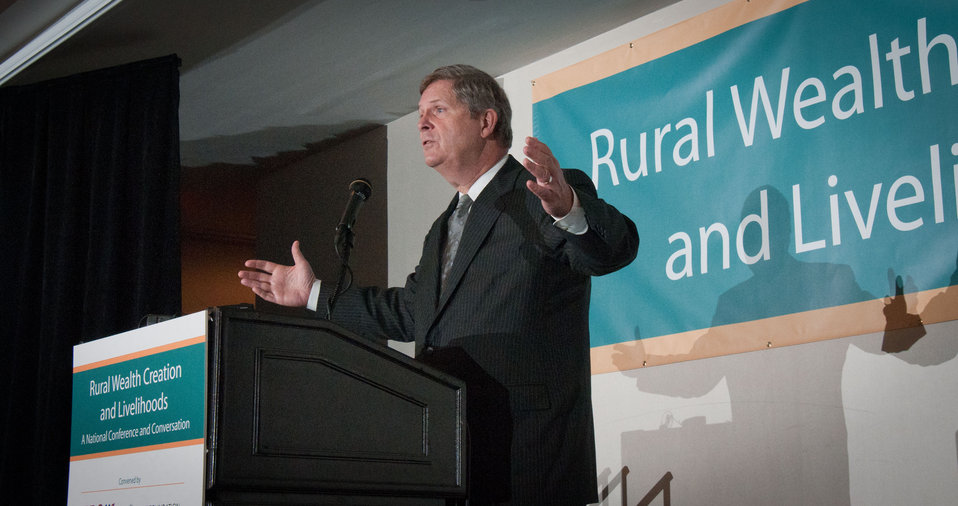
U.S. Department of Agriculture (USDA) Secretary Tom Vilsack responded to several questions following his keynote address to the Rural Wealth Creation and Livelihoods national conference for practitioners, researchers and policymakers, held at the Dupont Hotel, Washington DC, on Monday October 3, 2011. USDA partnered with the Ford Foundation to sponsor the conference.